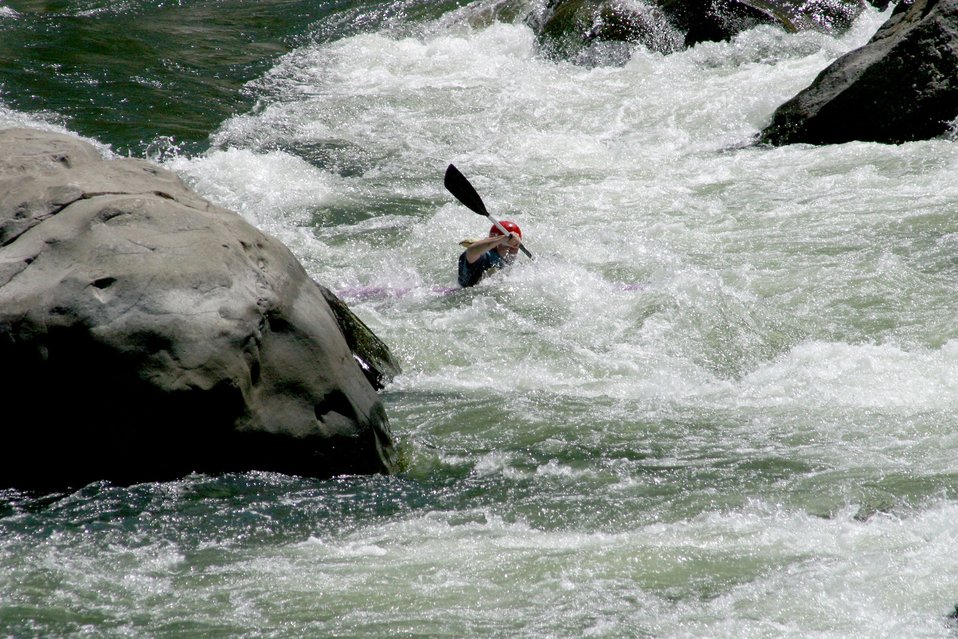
Boaters negotiate Blossom Rapids.